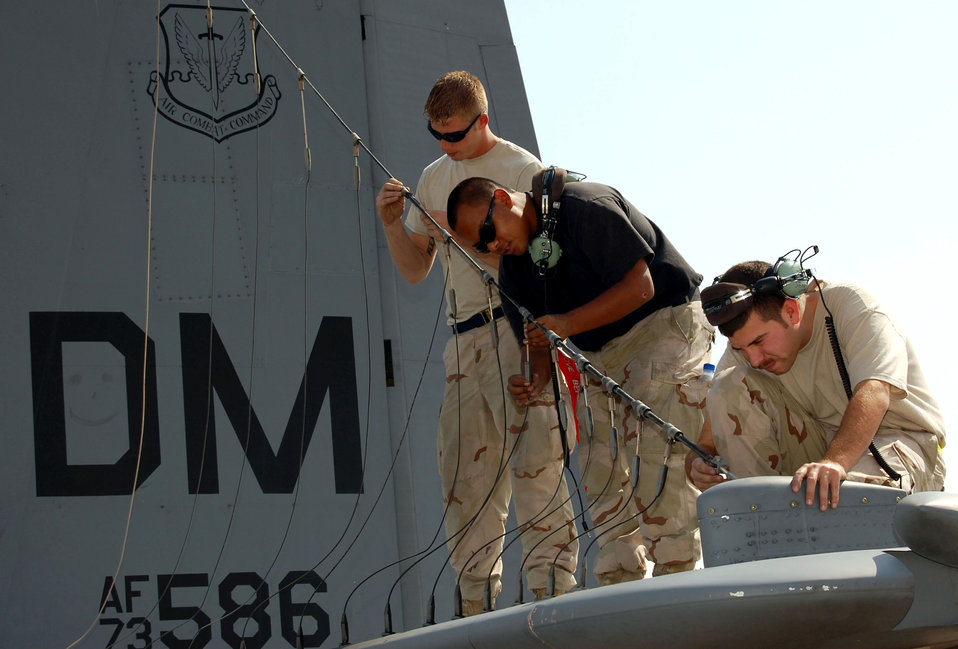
Aging C-130s: the geriatric fleet

Airman 1st Class Paige Sager, (from left) Senior Airman David Garcia and Tech. Sgt. James Vehlies examine element connectors on a high-power antenna Oct. 30 in Southwest Asia. The Airmen perform flightline maintenance on EC-130 Compass Call aircraft from the 43rd Expeditionary Electronic Combat Squadron. Airmen Sager and Garcia are crew chiefs, and Sergeant Vehlies is an electro-environmental systems craftsman.